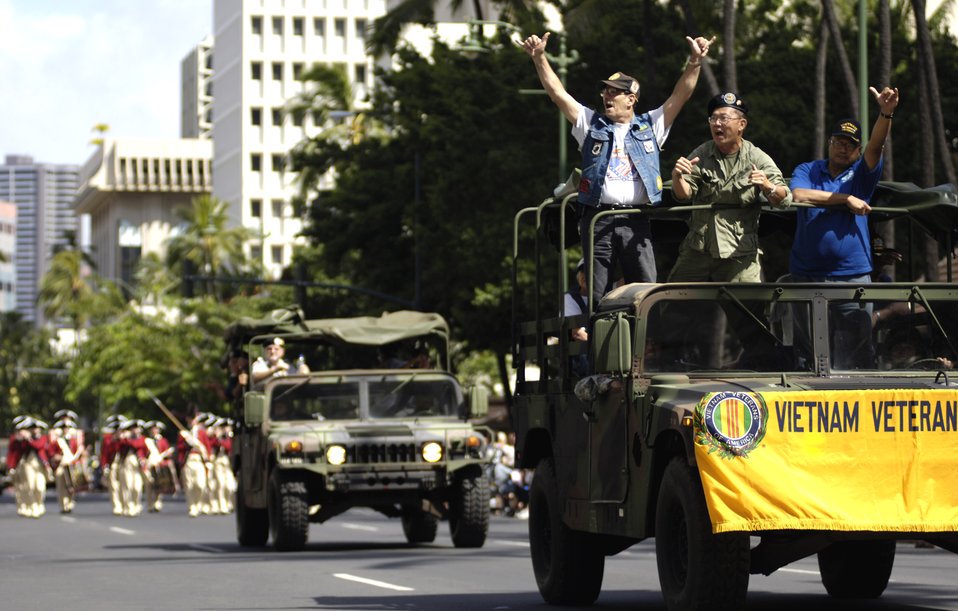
A salute to the troops

Vietnam veterans wave to the crowd during the